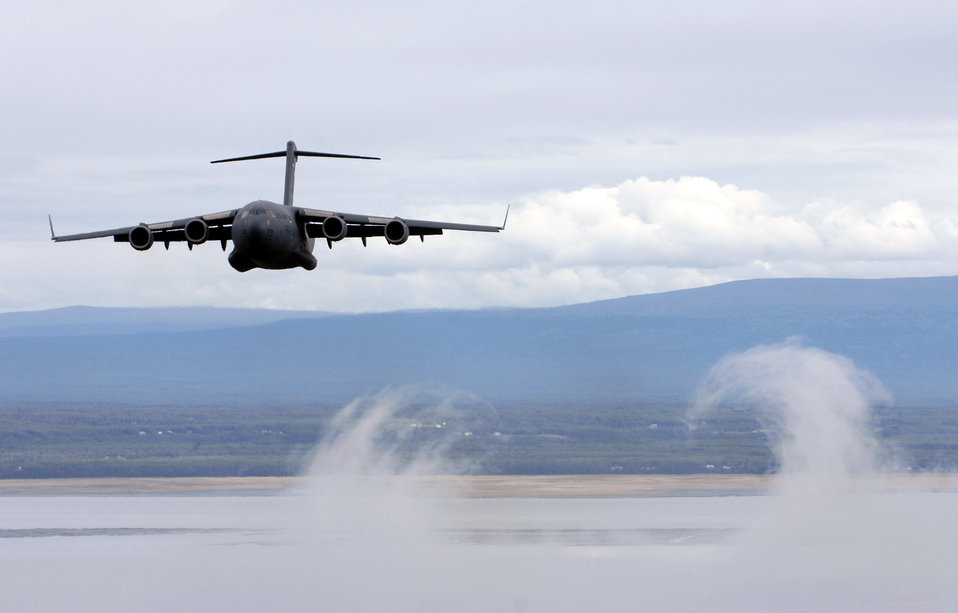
C-17 over Alaska

A C-17 Globemaster III makes a low approach to the Nelson drop zone as it conducts airdrop exercises over Fort Richardson, Alaska. The C-17 belongs to the 517th Airlift Squadron from Elmendorf Air Force Base, Alaska.